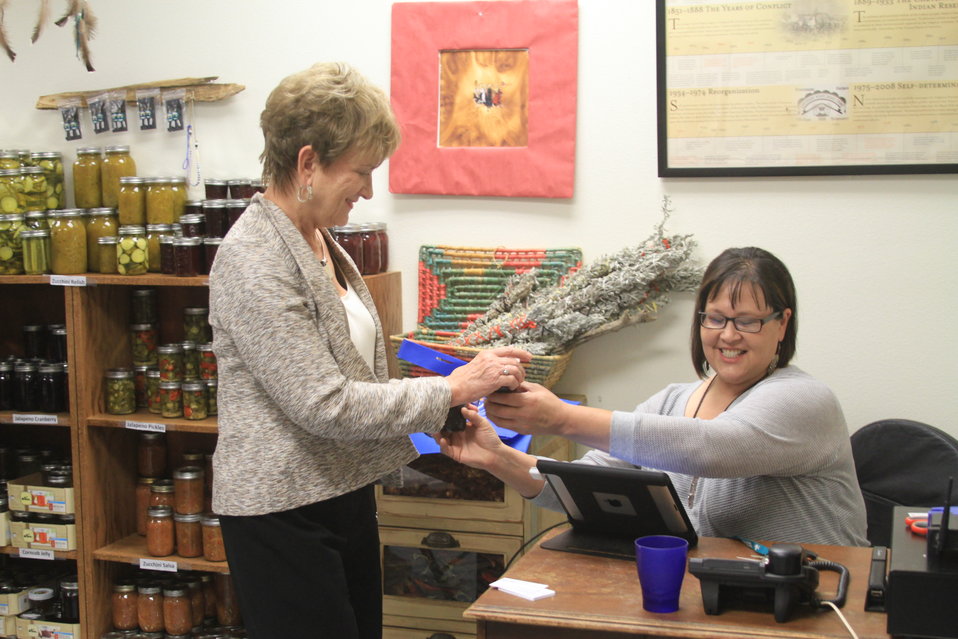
Janey Thornton, U.S. Department of Agriculture, Under Secretary for Food and Nutrition Service (FNS) purchases some jelly from Garreau inside the gift store at the Cheyenne River Youth Center in Eagle Butte SD on Tuesday, September 24th. Many of the canned items in the store were raised in the garden just outside of the Youth Center. USDA photo by Tim Potts.
.